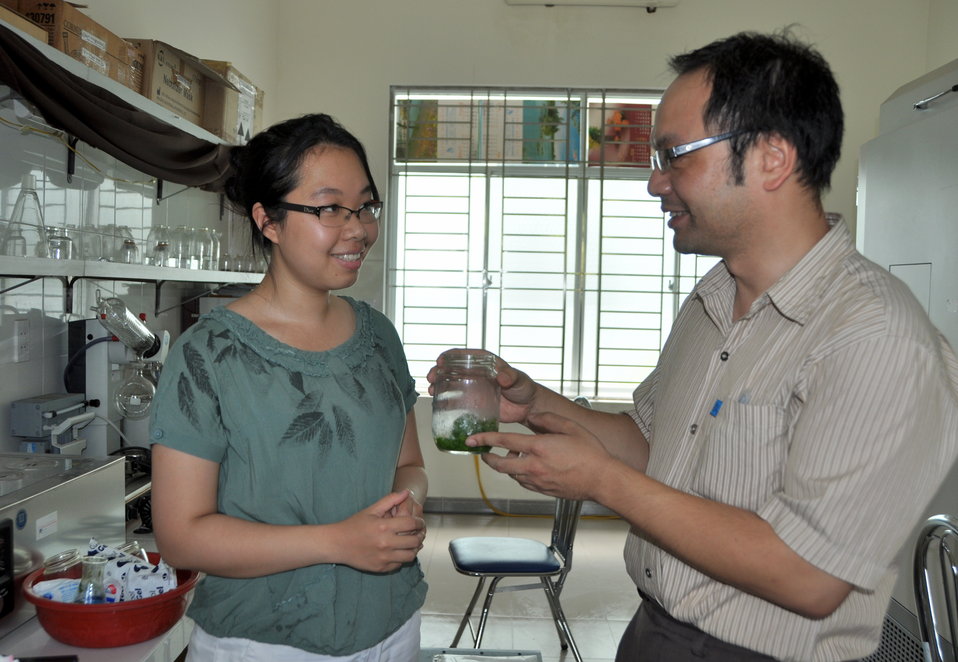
USAID Mission Director visits Danang University of Technology

Danang, July 17, 2013